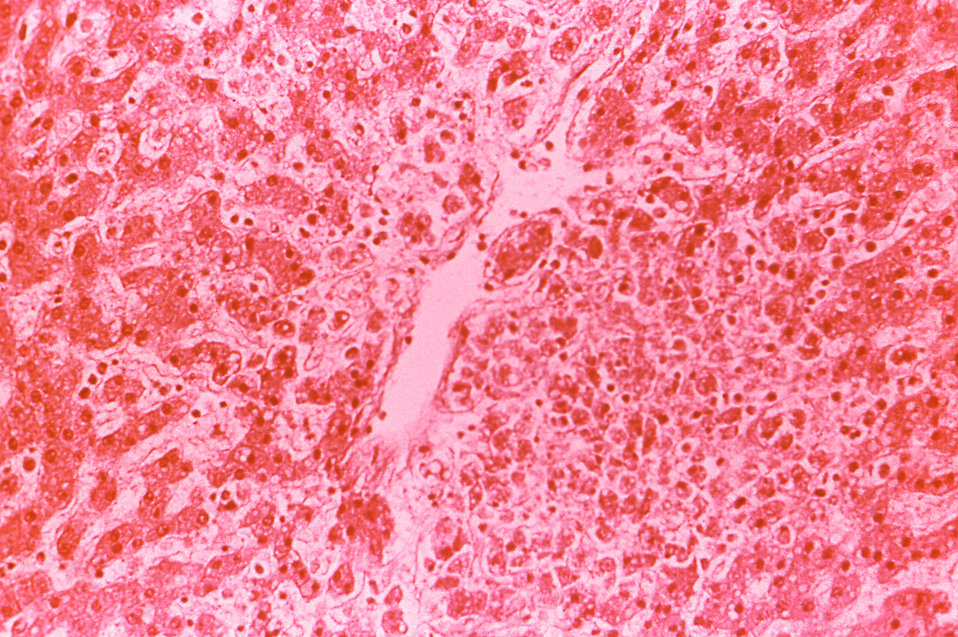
Under a magnification of 165X, this hematoxylin-eosin-stained (H&E) photomicrograph depicts the cytoarchitectural changes found in a liver tissue specimen extracted from a Dengue hemorrhagic fever patient in Thailand. This particular view reveals 'mid-lobular necrosis, with accompanying acidophilic degeneration, and moderate hypertrophy of Kupffer cells.'